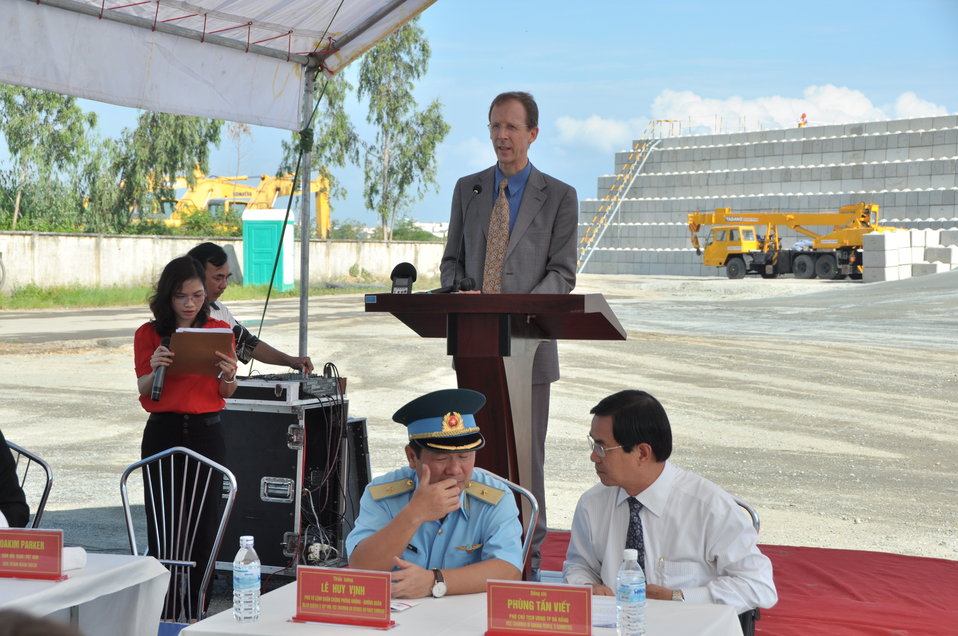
Media Tour of Environmental Remediation of Dioxin Contamination at Danang Airport

USAID Mission Director Joakim Parker addresses the media
Danang, Vietnam
April 24, 2013